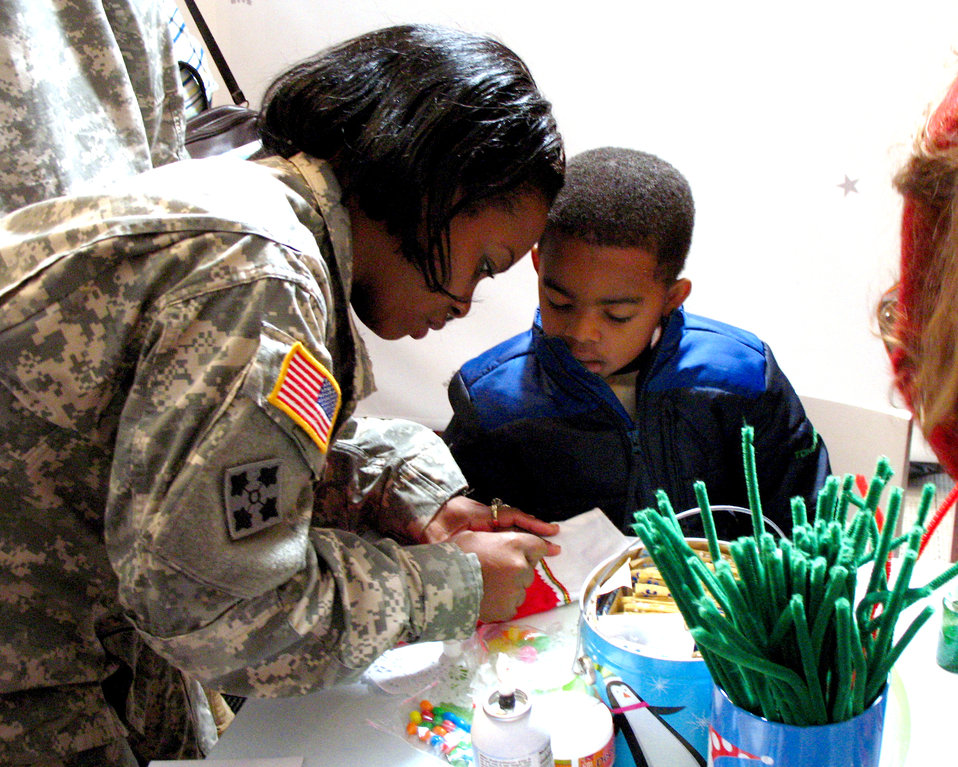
Operation Christmas

Army Sgt. Janet Rush helps her son Cameron Nails make a Christmas stocking during Operation Christmas Dec. 13 at the Texas National Guard Armory in San Antonio. Operation Christmas is an outreach program designed to show support to military families during the holiday season.